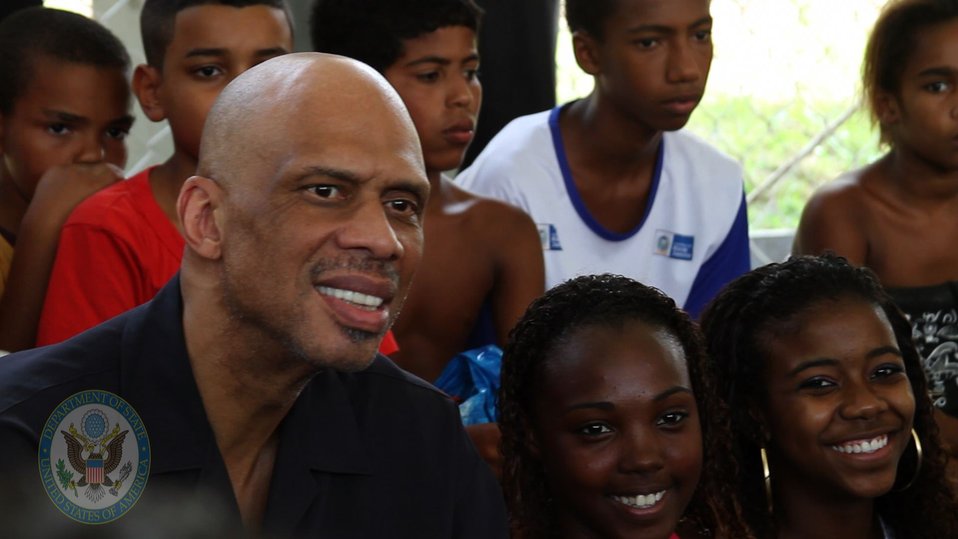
Global Cultural Ambassador Kareem Abdul-Jabbar Poses for a Photo With Young Brazilians

Hall-of-Famer and Global Cultural Ambassador for the U.S. Department of State Kareem Abdul-Jabbar poses for a photo with young Brazilians in Rio de Janeiro, Brazil, on January 26, 2012.